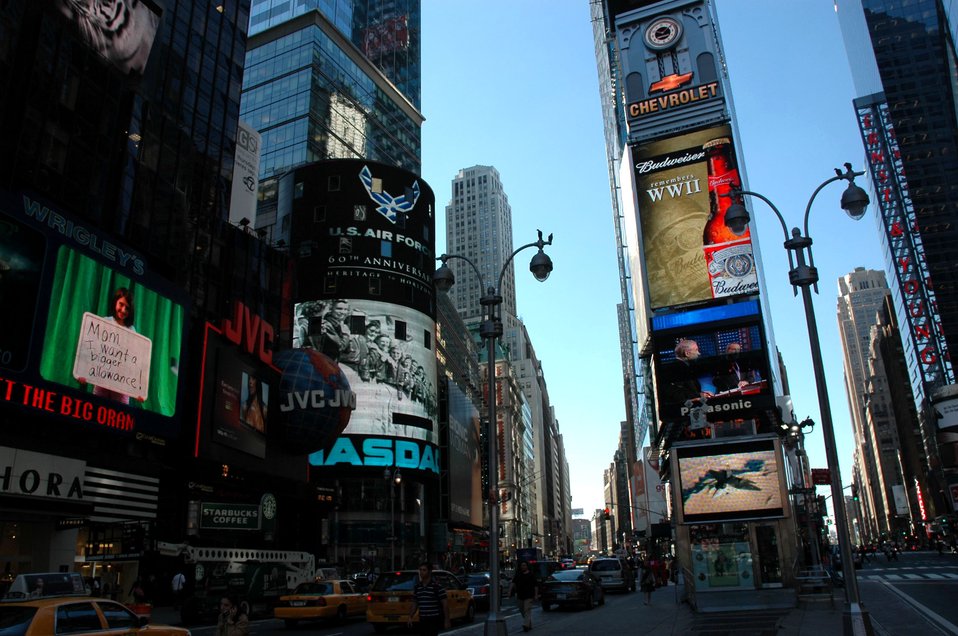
New York City salutes Air Force's birthday

New York City offers the Air Force a 60th birthday salute in Times Square Sept. 18, courtesy of the Nasdaq stock market and Reuters news service. The companies displayed the Air Force graphics throughout the day to mark the occasion.